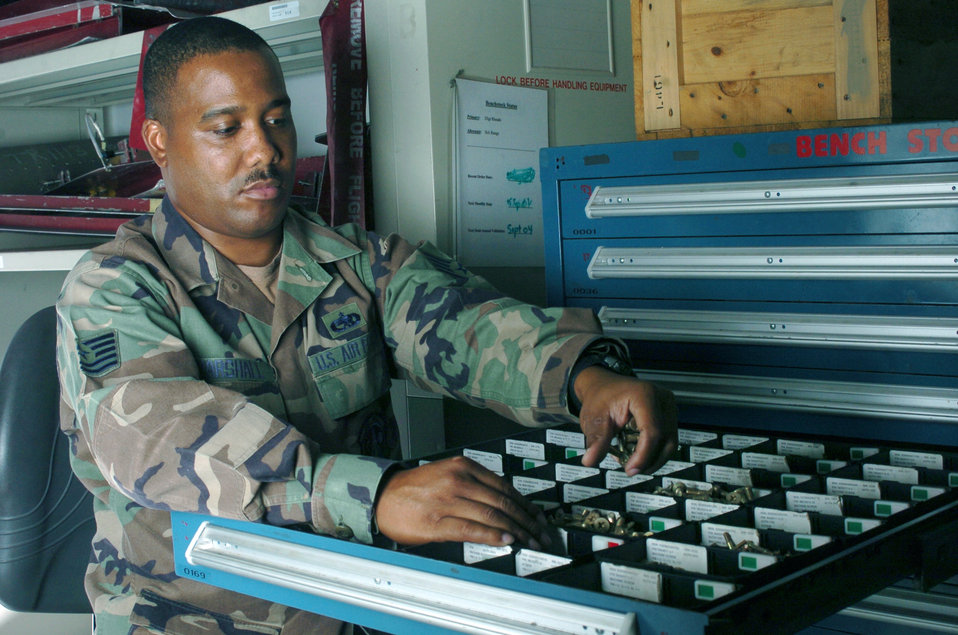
Gotta fix 'em before you fly 'em

KADENA AIR BASE, Japan -- Tech. Sgt. Kenneth Marshall sorts bolts in a bench-stock drawer at the consolidated tool kit section. The tool kit Airmen handle about 1,600 bench-stock items, about 200 pieces of equipment and 120 hazardous materials for mechanics who maintain the Special Operations MC-130 Combat Talon and Combat Shadow fleet here. Sergeant Marshall is assigned to the 353rd Maintenance Squadron.